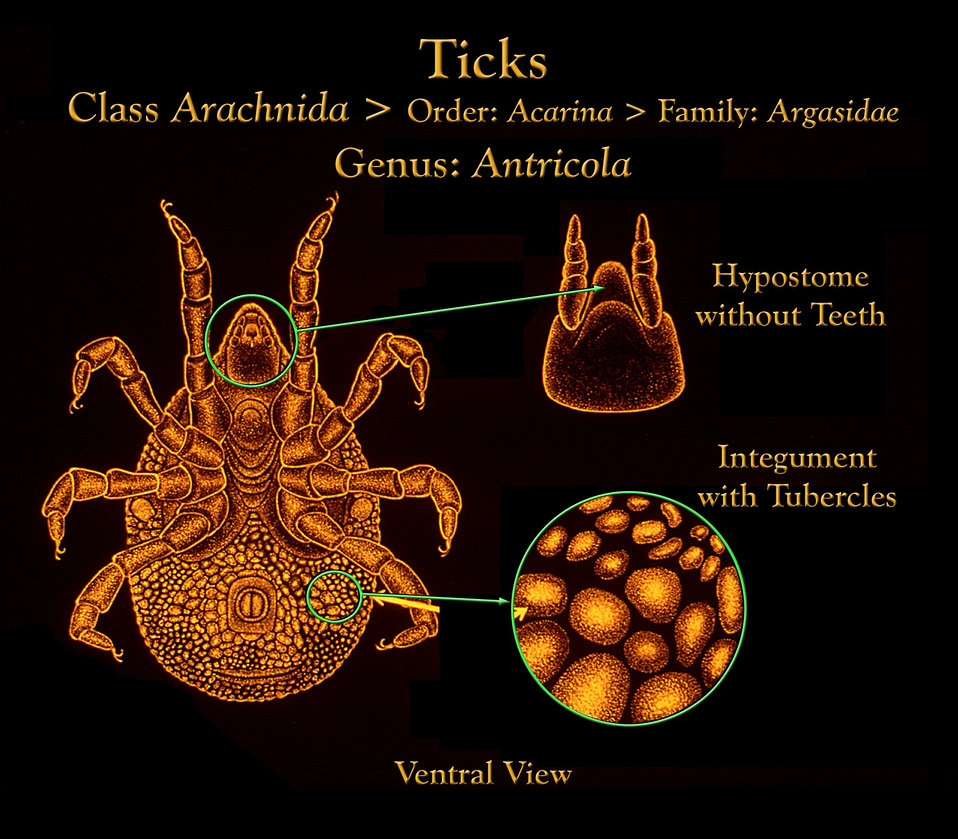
This drawing depicts the ventral appearance of an Agasidae soft tick of the genus Antricola.